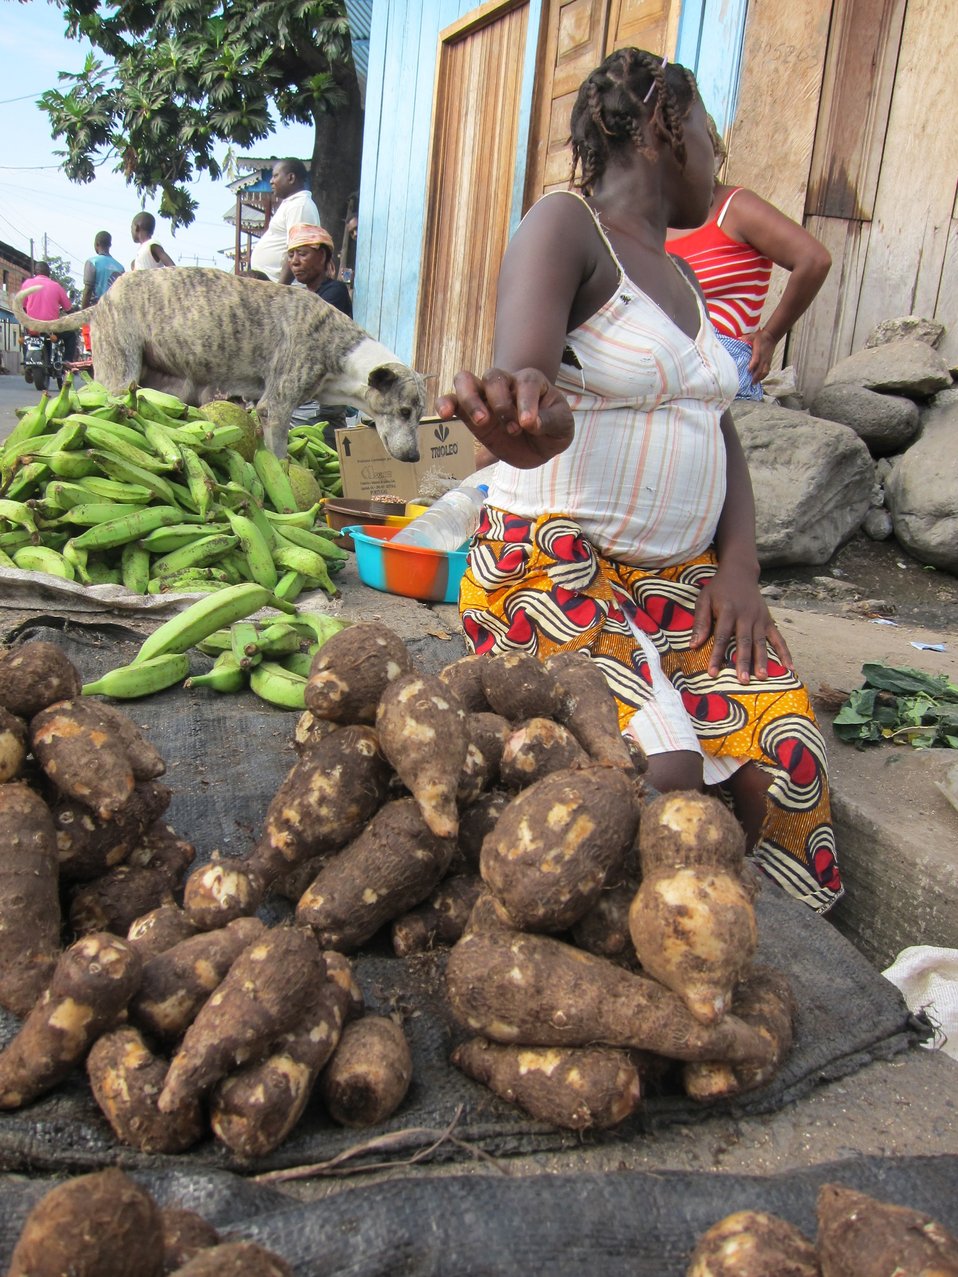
Sao Tomean Women Selling Roots at Local Market